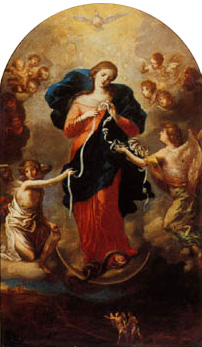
en:Mary Untier of Knots